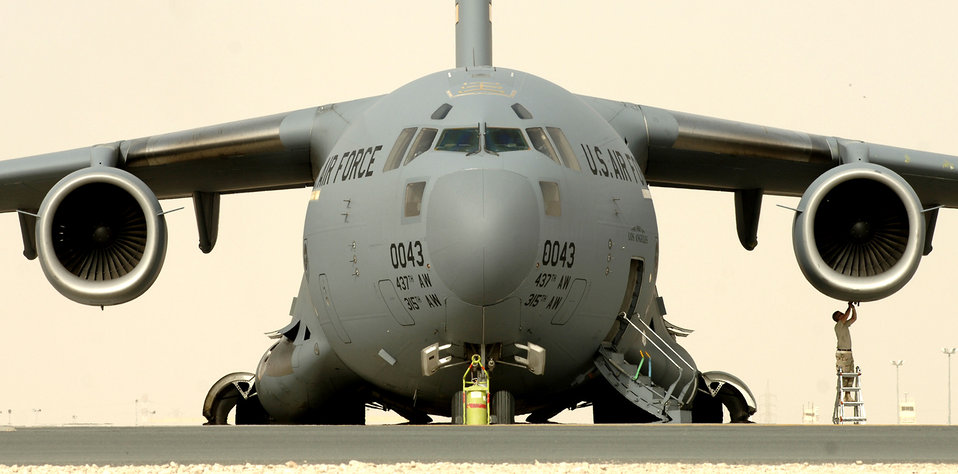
Everything checks out

A C-17 Globemaster maintainer prepares his aircraft for take off in support of operations in Iraq. C-17's provid intra-theater heavy airlift support.